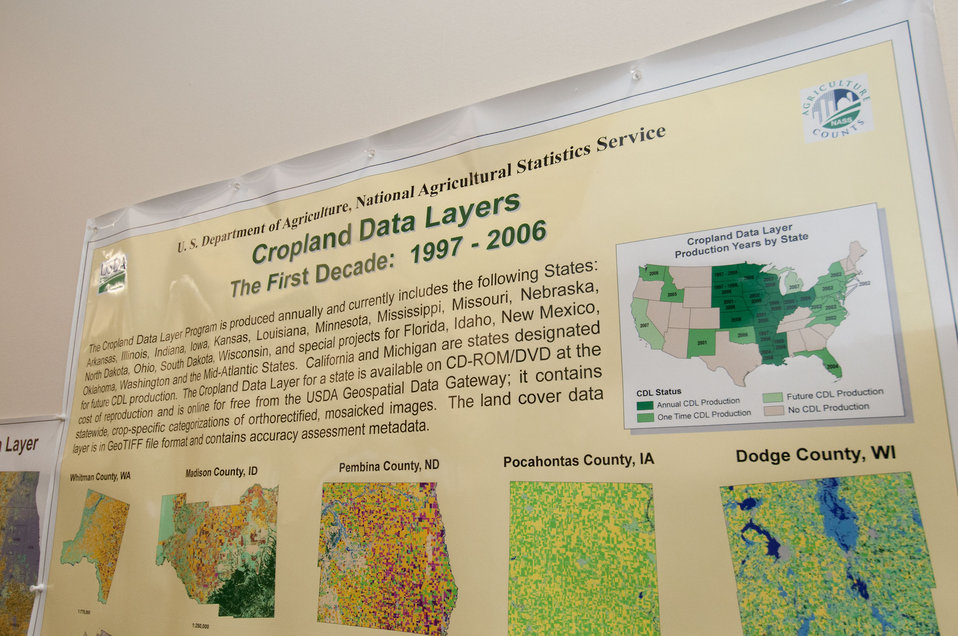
Agricultural Statistics Service office in Springfield, IL, on Wednesday, November 2, 2011.